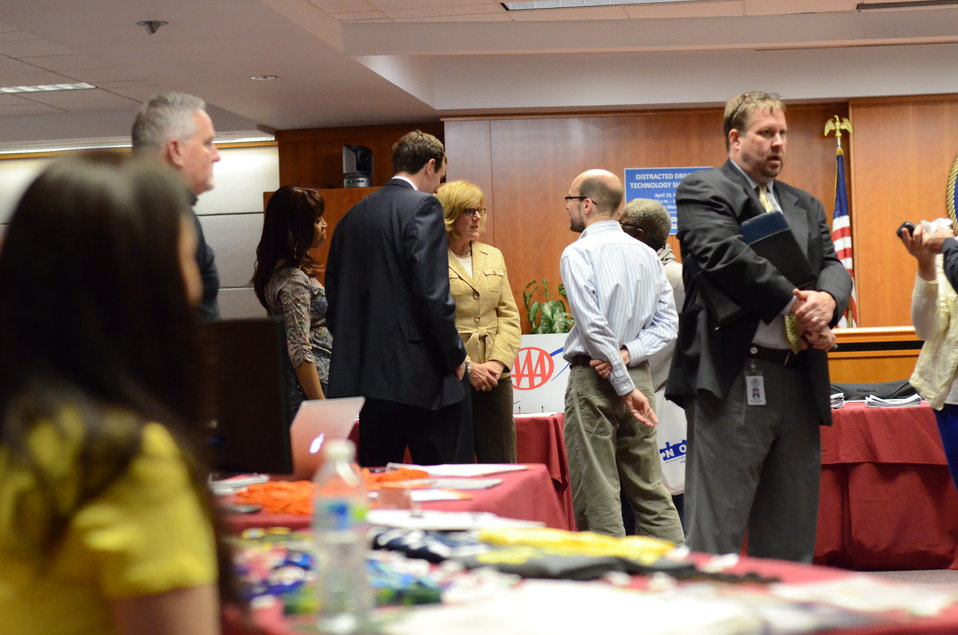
Distracted Driving Technology Showcase April 19, 2013